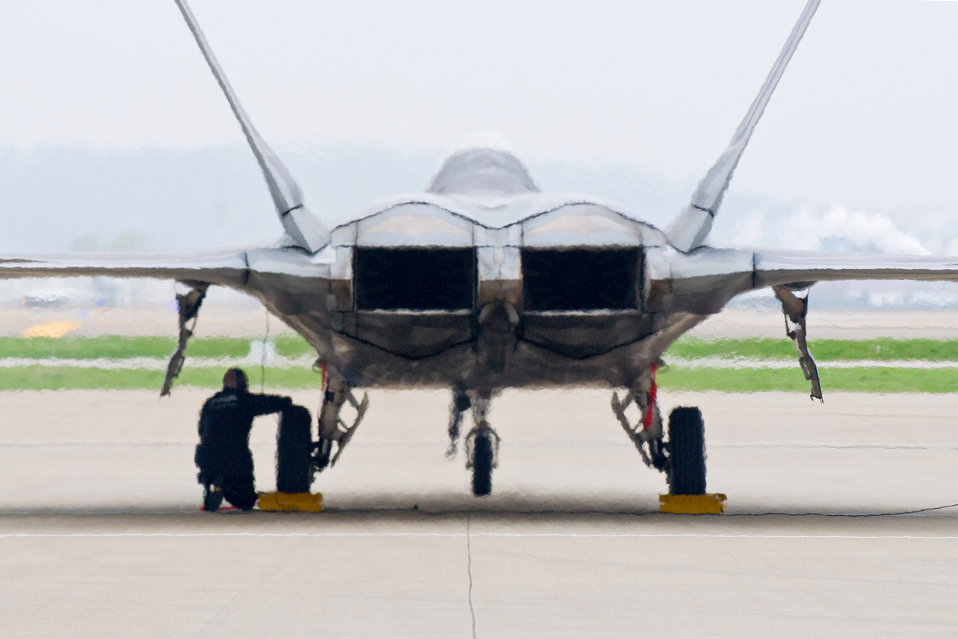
Parked for the night

A crew chief for the U.S. Air Force F-22 Raptor aerial demonstration team chocks a Raptor's wheel April 16 on the flightline of the Kentucky Air National Guard base in Louisville, Ky. The team will be participating in the Thunder Over Louisville air show April 18.